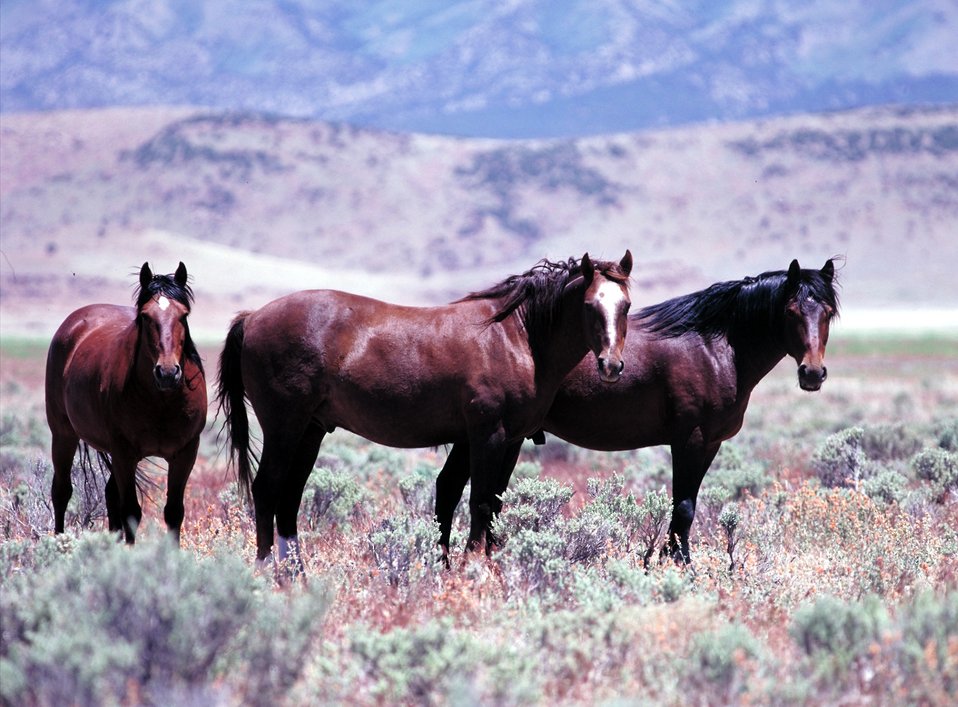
Onaqui Herd near Dugway, Utah.